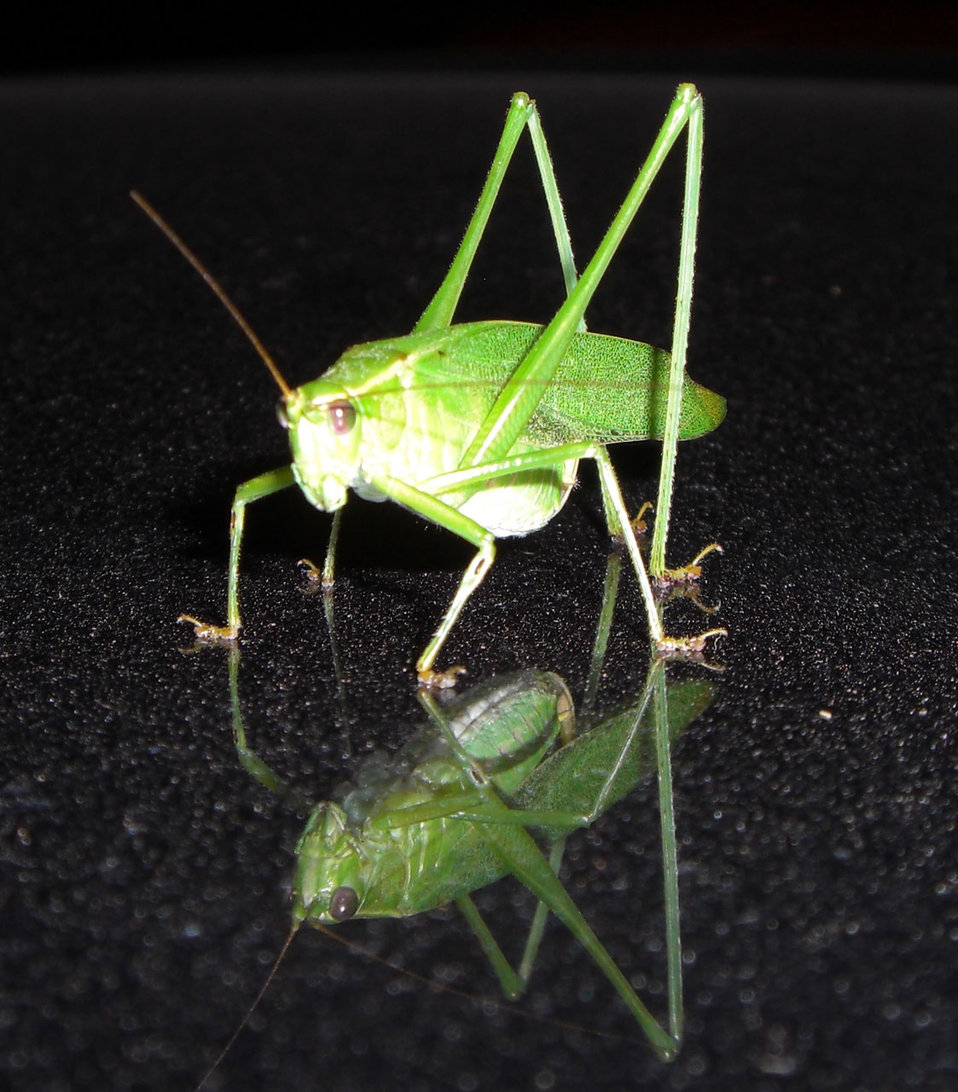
Katydid on top of my (dirty) car..